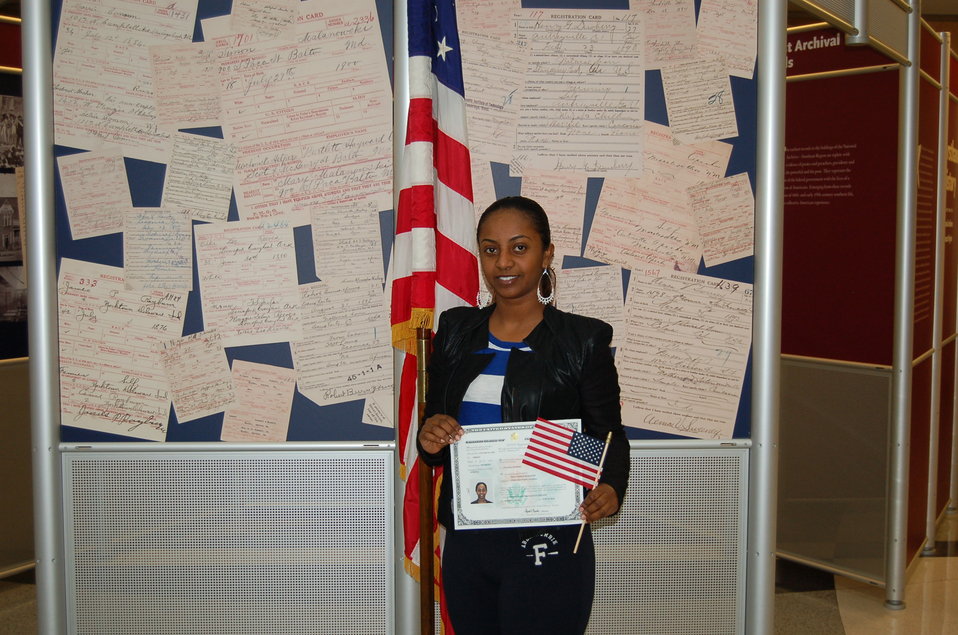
New Citizens